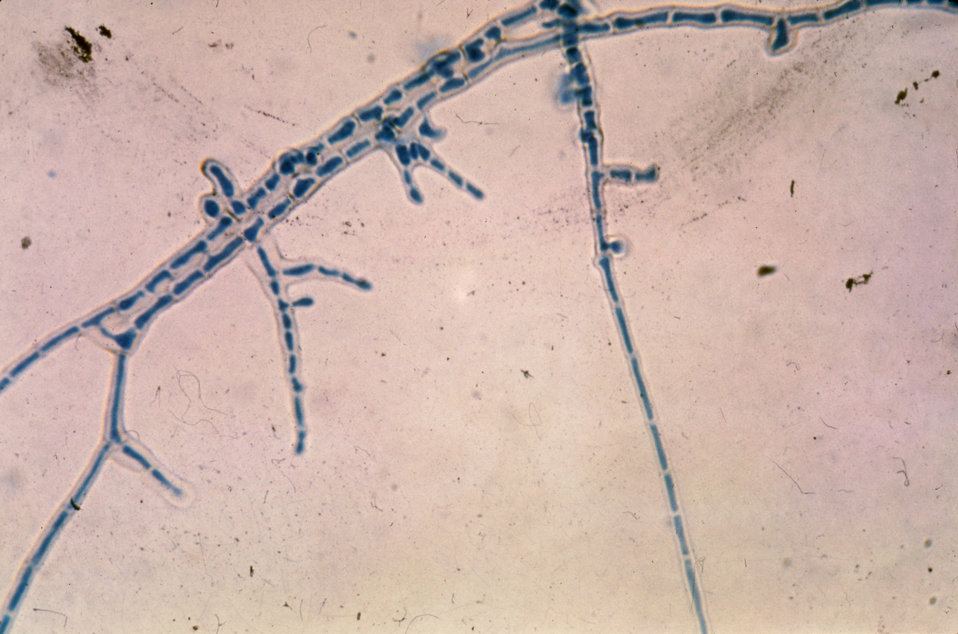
This is a photomicrograph of the mycelium of the fungus Piedraia hortae, magnified 475X.